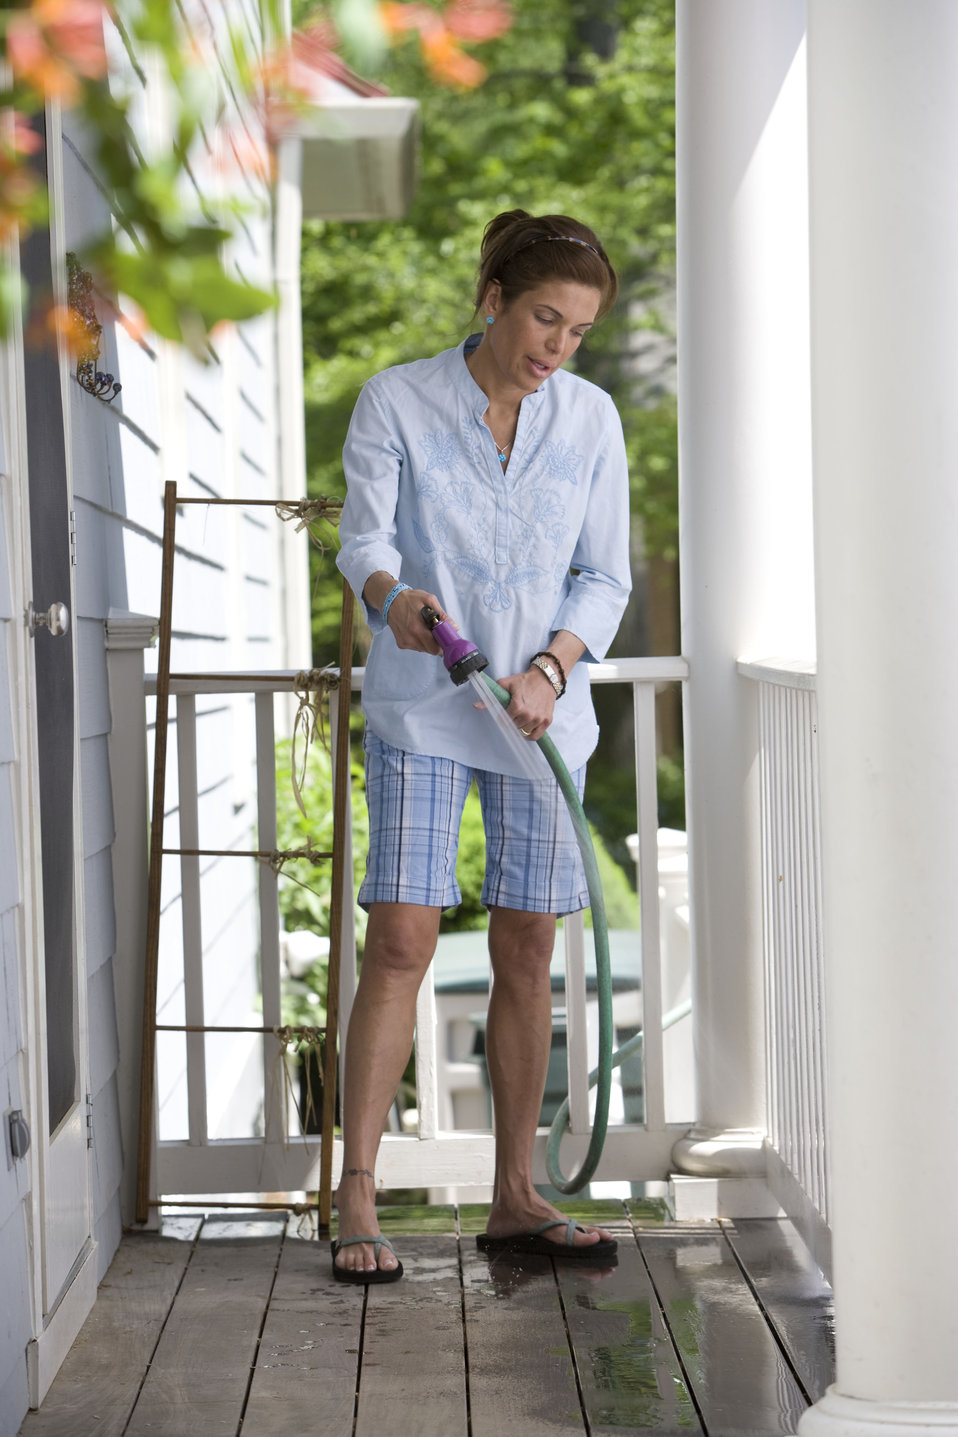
Home maintenance includes both the indoor, and as was the case here, outdoor environment, and is an ongoing process with which a homeowner need to keep up in order to provide for a healthy living space. Keeping your porch dust free reduces the amount of contaminants tracked into the house.